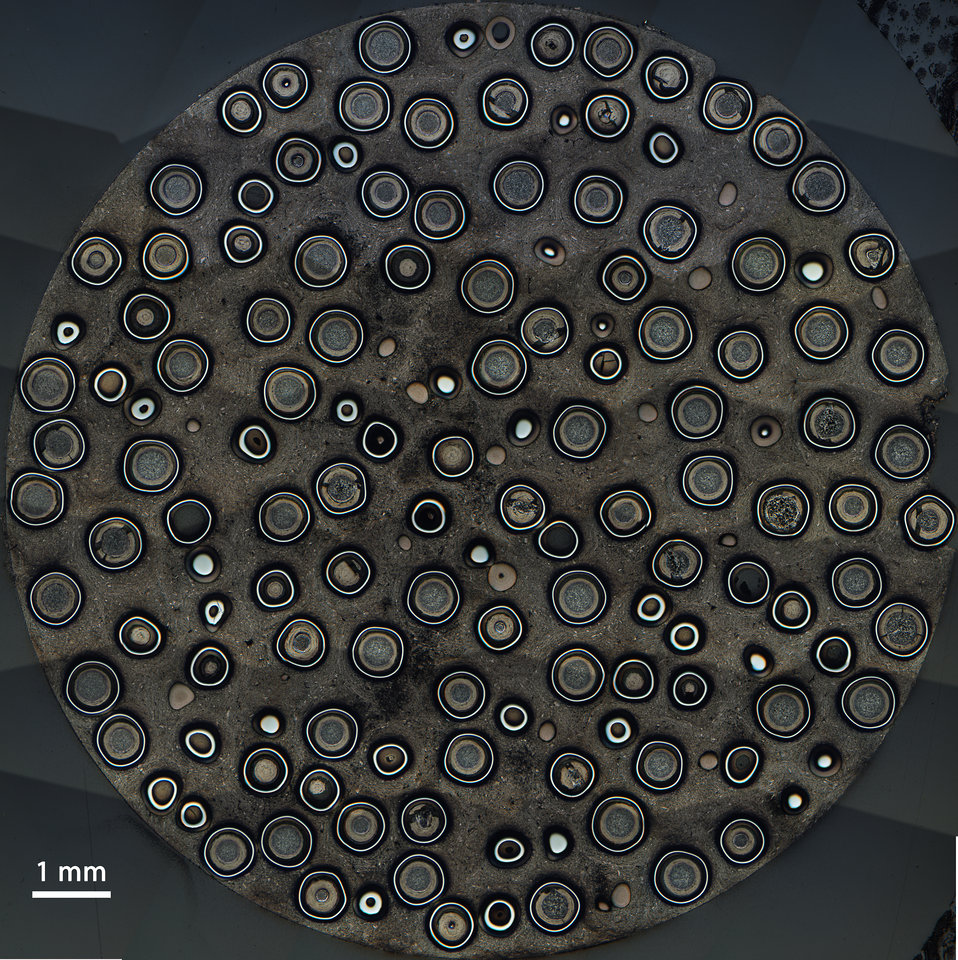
AT IDAHO NATIONAL LABORATORY, SHOWN IS A CROSS-SECTION OF FUEL PELLET CONTAINING TRISTRUCTURAL-ISOTROPIC (TRISO) PARTICLES AT 10 MM SCALE.

TRISO fuel particles are the size of poppy seeds. Break one open and it looks like tiny jaw-breakers. An outer shell of carbon coats a layer of silicon carbide, which coats another layer of carbon and the uranium center- where the energy-releasing fission happens. By-products of the fission process have the potential to escape the fuel, especially at very high temperatures. Even at 1,800, which each boast their own primary containment system.